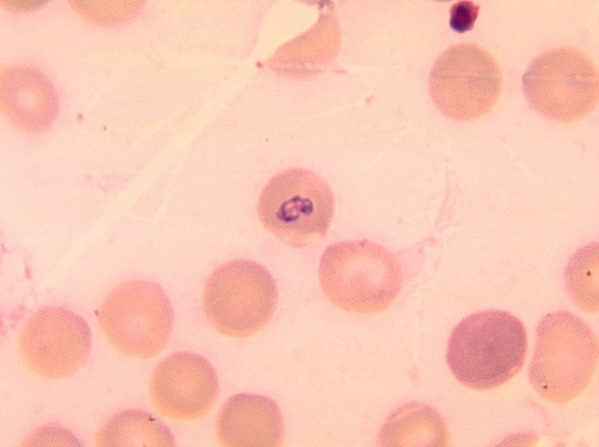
Blood smear showing larger trophic stage of Babesia microti in erythrocyte.